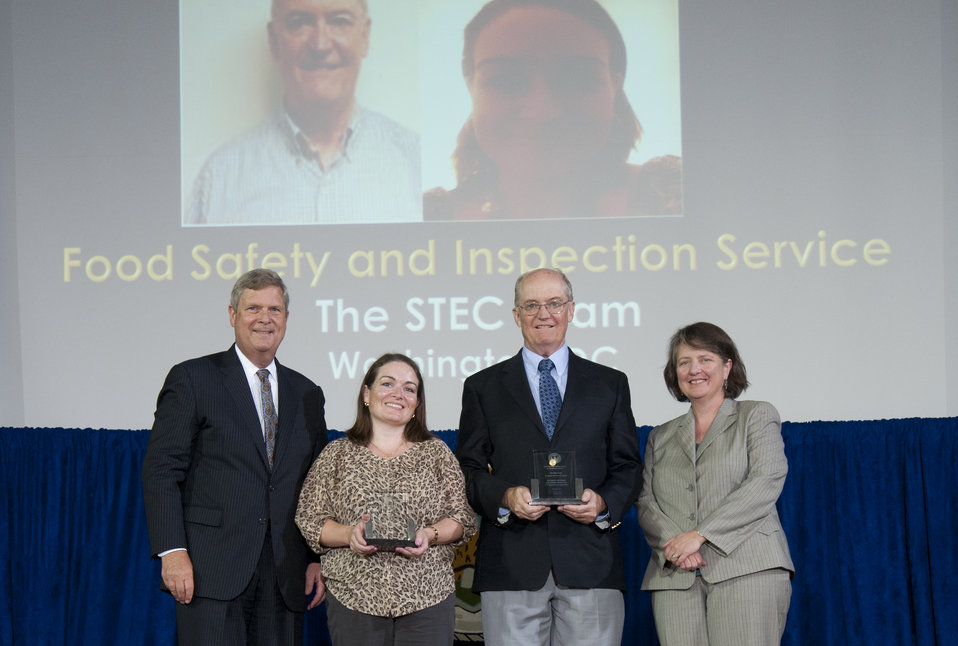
Agriculture Secretary Tom Vilsack and Agriculture Deputy Secretary Kathleen Merrigan present the Secretary’s Honor Award to STEC Team Food Safety and Inspection Service group leaders Denise R. Eblen and William Cray at the U.S. Department of Agriculture (USDA) 64th Annual Honor Awards Ceremony in Washington, D.C. on Wednesday, Sept. 12, 2012. The STEC Team provided leadership to protect the U.S. food supply, through timely development and implementation of a robust science-based program for controlling non-0157 Shiga toxin-producing pathogenic E. coli in beef.